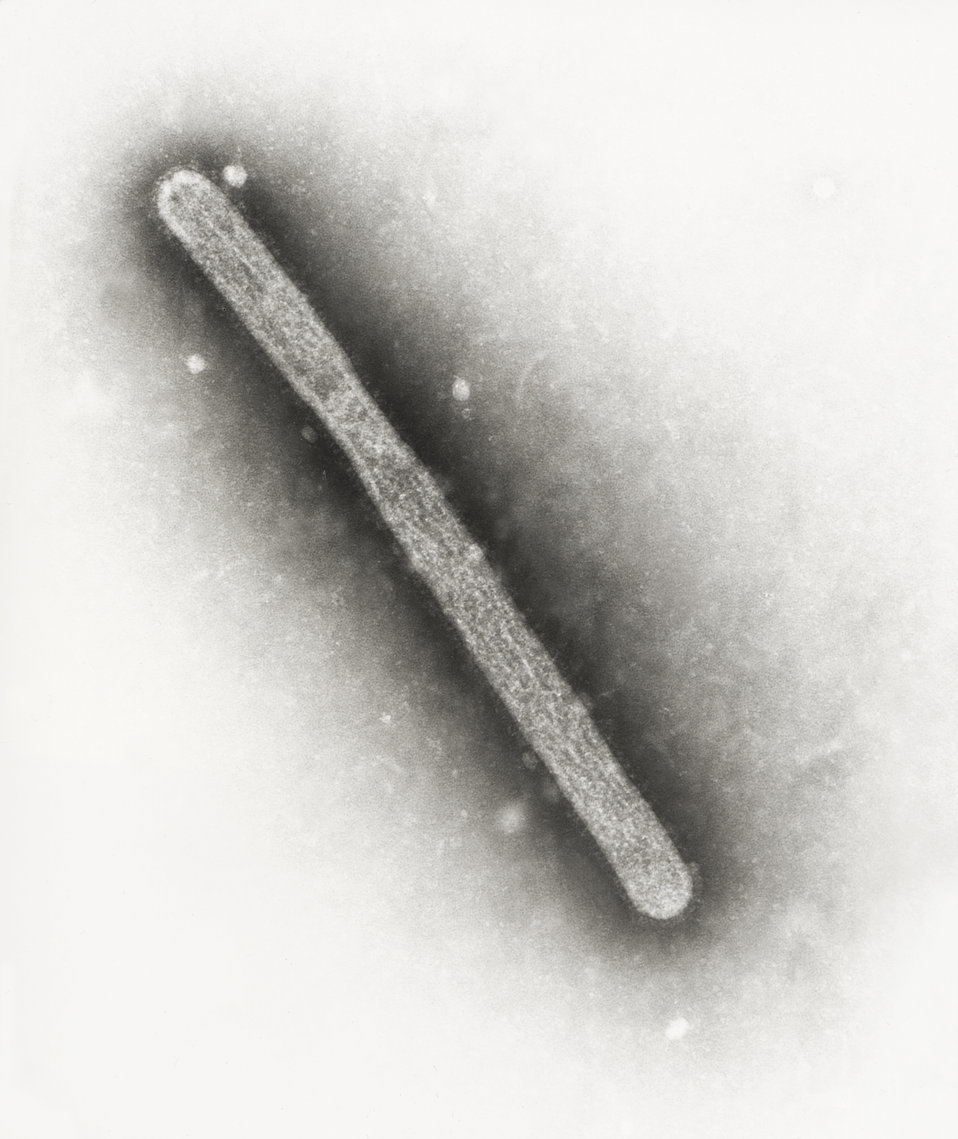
This transmission electron micrograph (TEM), taken at a magnification of 150,000x, revealed the ultrastructural details of an avian influenza A (H5N1) virion, a type of bird flu virus which is a subtype of avian influenza A. At this magnification, one may note the stippled appearance of the roughened surface of the proteinaceous coat encasing the virion.